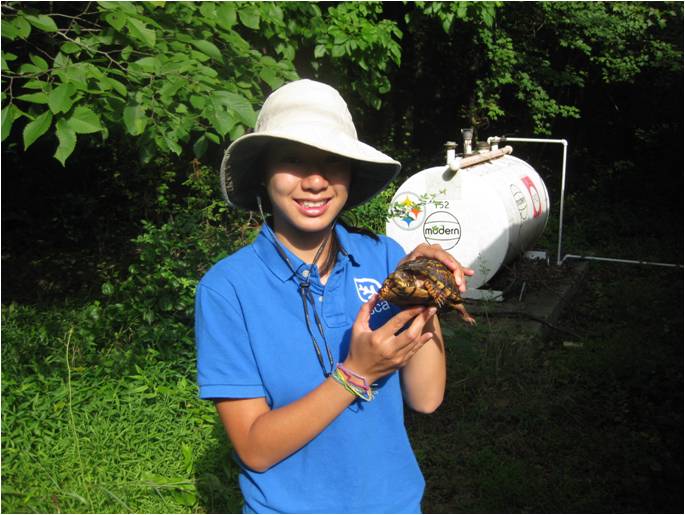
SCA intern at Patuxent Research Refuge